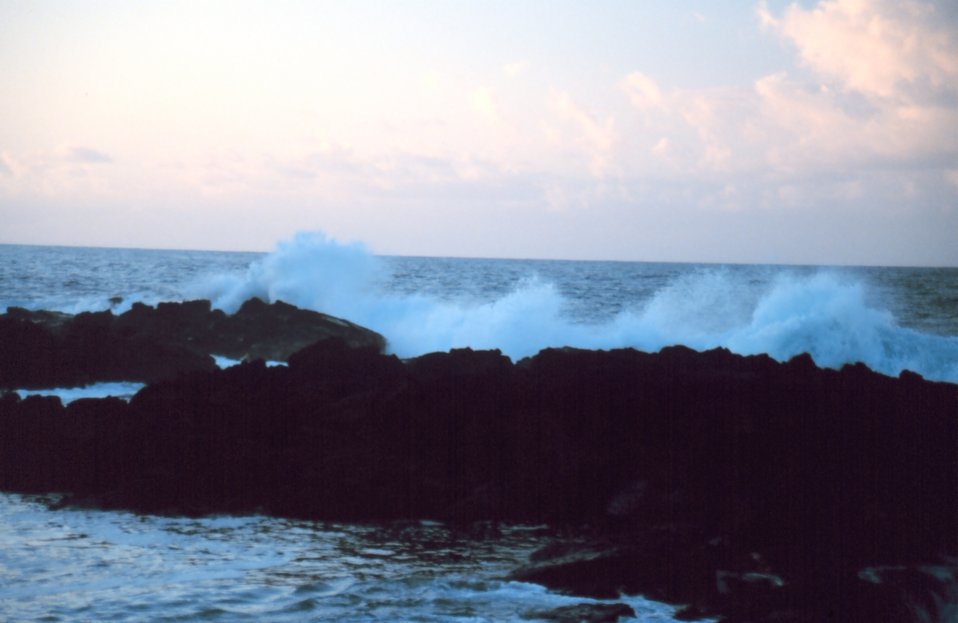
The coastline near Hilo